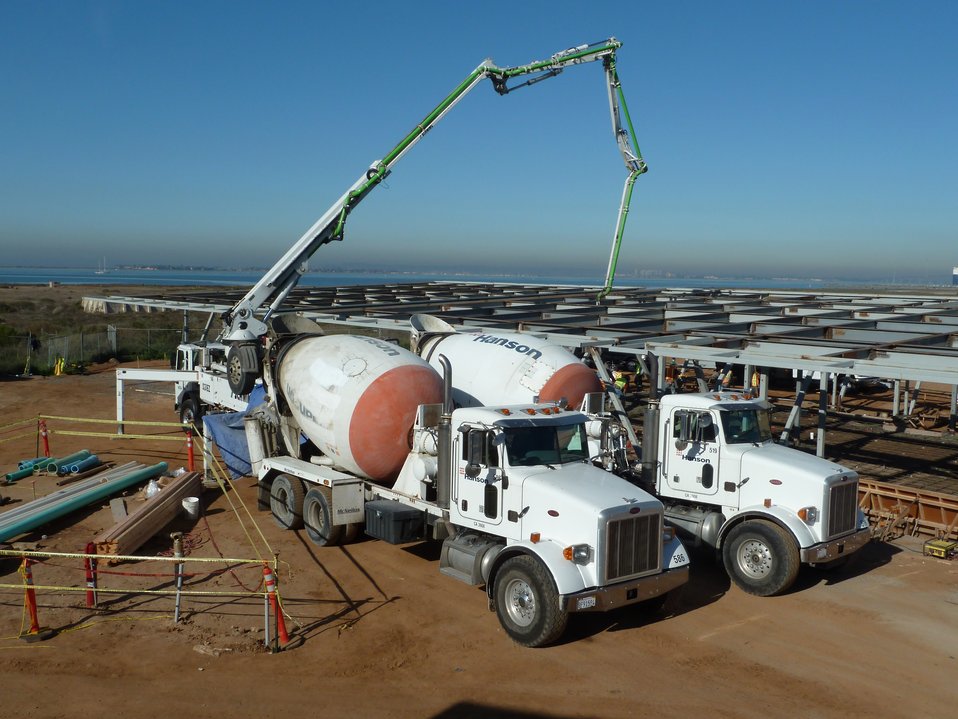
New San Diego Complex Administration Building Concrete Pour

Photo taken on December 7, 2010.